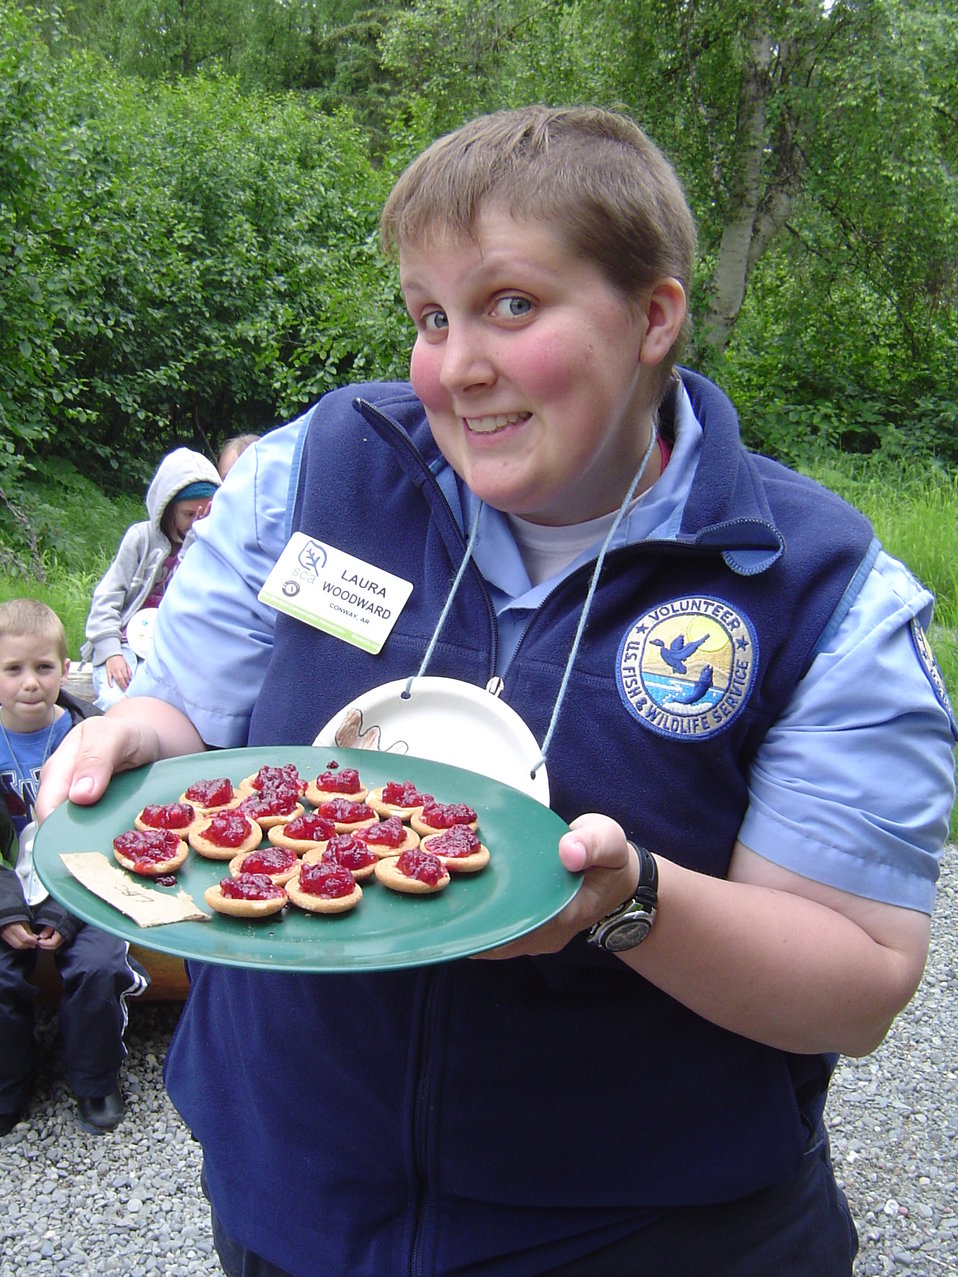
Kenai Refuge, AK

Wild Berry Tasting Critter Camp